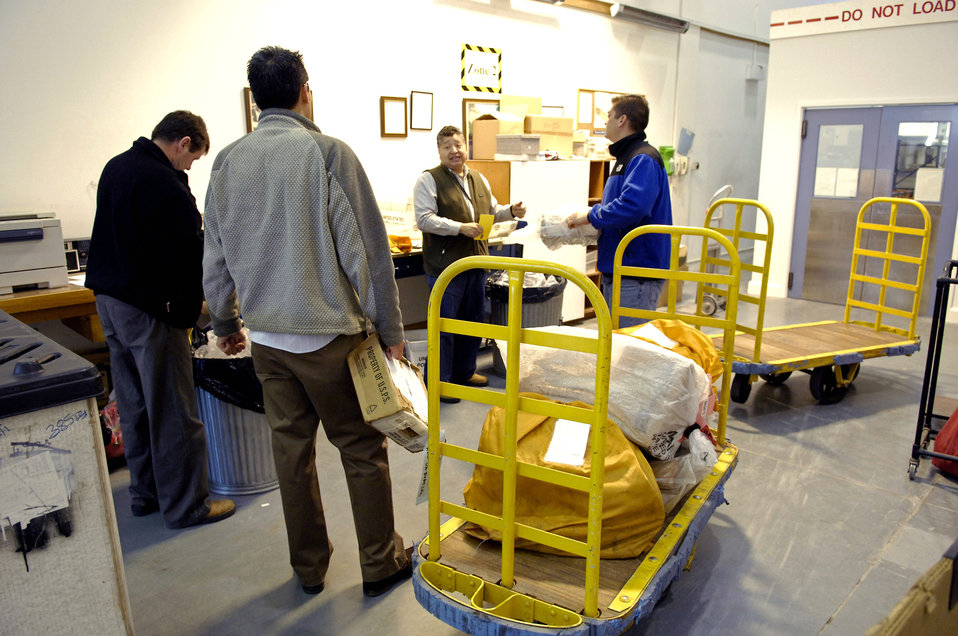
Neither snow nor deep freeze keep mail from Antarctica

Members of Det. 4, Pacific Air Forces Air Postal Squadron sort mail for Operation Deep Freeze members Aug. 23 at Christchurch, New Zealand. Det. 4 officials process all mail coming in and out of Antarctica and can handle up to 240,000 pounds of mail during Operation Deep Freeze.